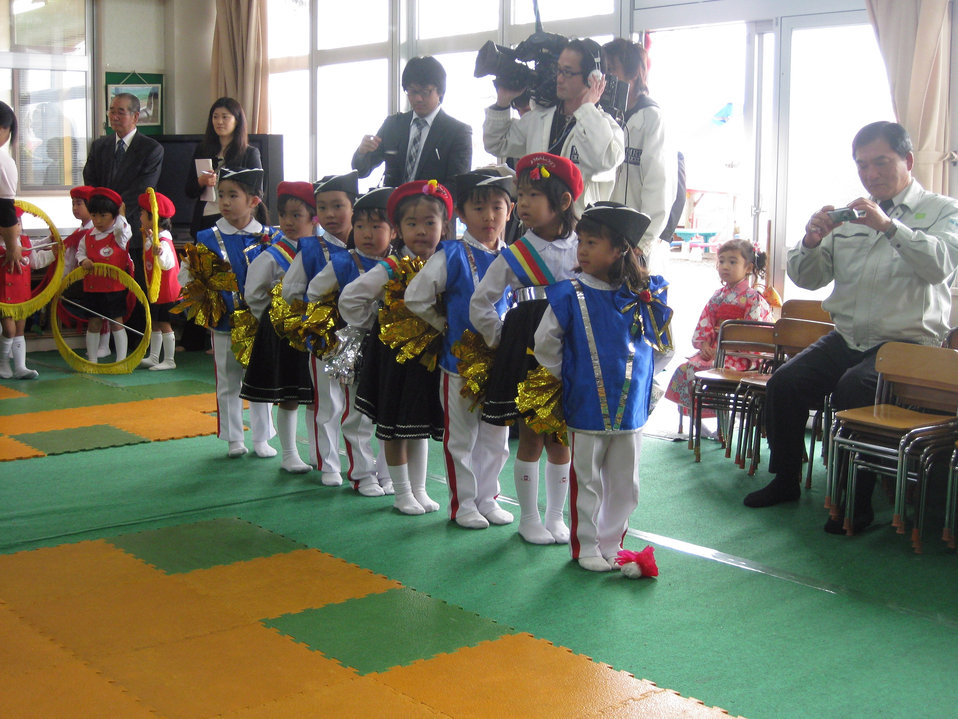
Kadena Airmen volunteer time to Japanese children

Airmen from Kadena Air Base, Japan, watch 60 children perform Feb. 26 at Isshin preschool in Miyazaki Prefecture, Japan.